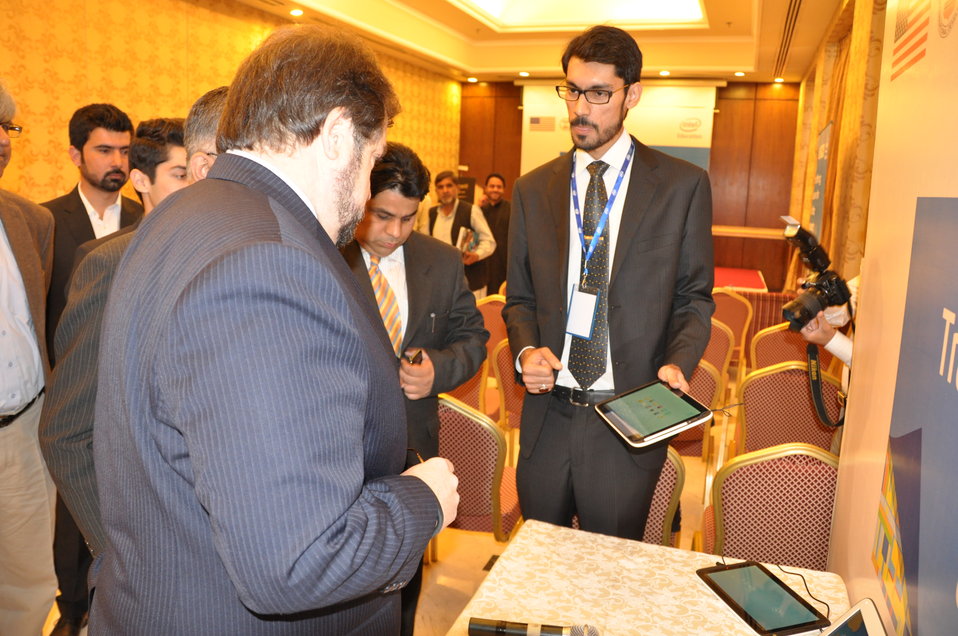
Intel MoU2

An Intel Pakistan technician shows USAID Punjab Provincial Director Jeffery Bakken some of the tools that will improve education in Punjav through the agreement that was signed today between USAID and Intel Pakistan.